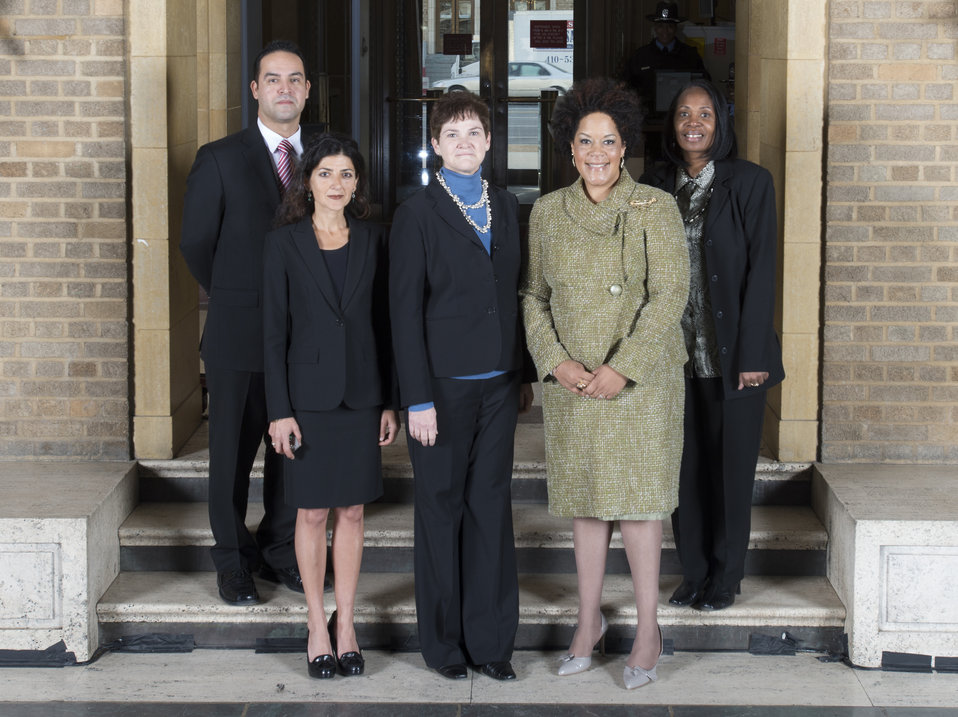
Agriculture Deputy Secretary Krysta Harden stands with the Bronze Presidential Volunteer Service Awardees on the patio at the U.S. Department of Agriculture (USDA) in Washington, D.C. on Wednesday, Dec. 11, 2013. The President’s Bronze Volunteer Service Award is given to employees that hasveserved a minimum of 100 hours and a maximum of 249 hours of service.